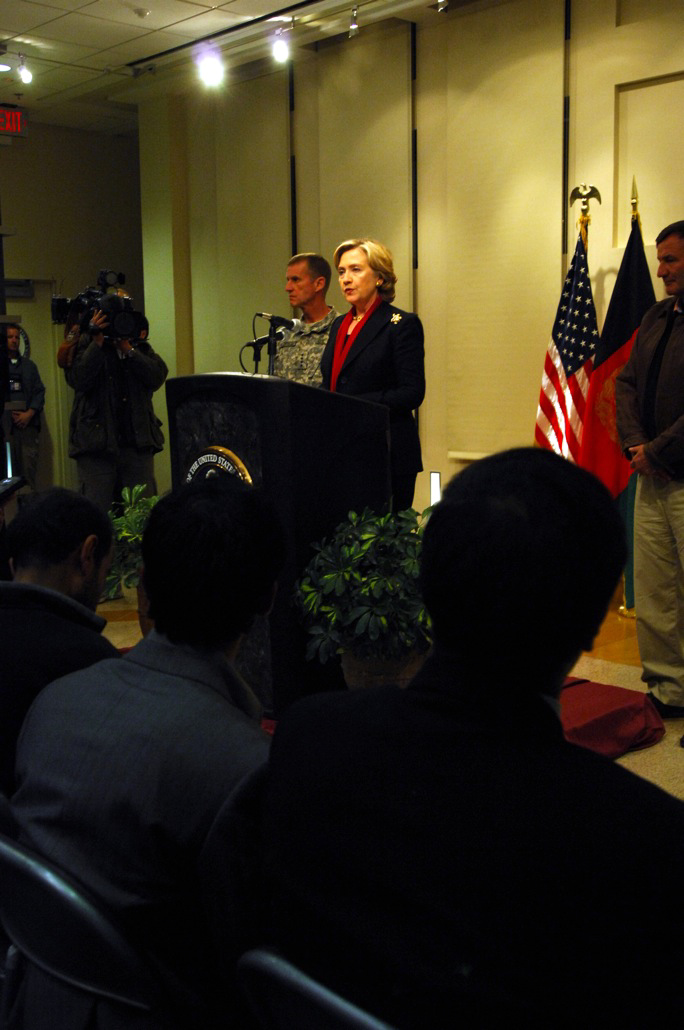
Secretary Clinton Travels to Afghanistan

U.S. Secretary of State Hillary Rodham Clinton holds a press conference at the U.S. Embassy in Kabul, Afghanistan November 19, 2009. Secretary Clinton traveled to Afghanistan to attend President Hamid Karzai's November 19, 2009 inauguration ceremony, meet with Afghanistan's leadership, international partners and allies, U.S. troops, staff in Provincial Reconstruction Teams, and Embassy staff.